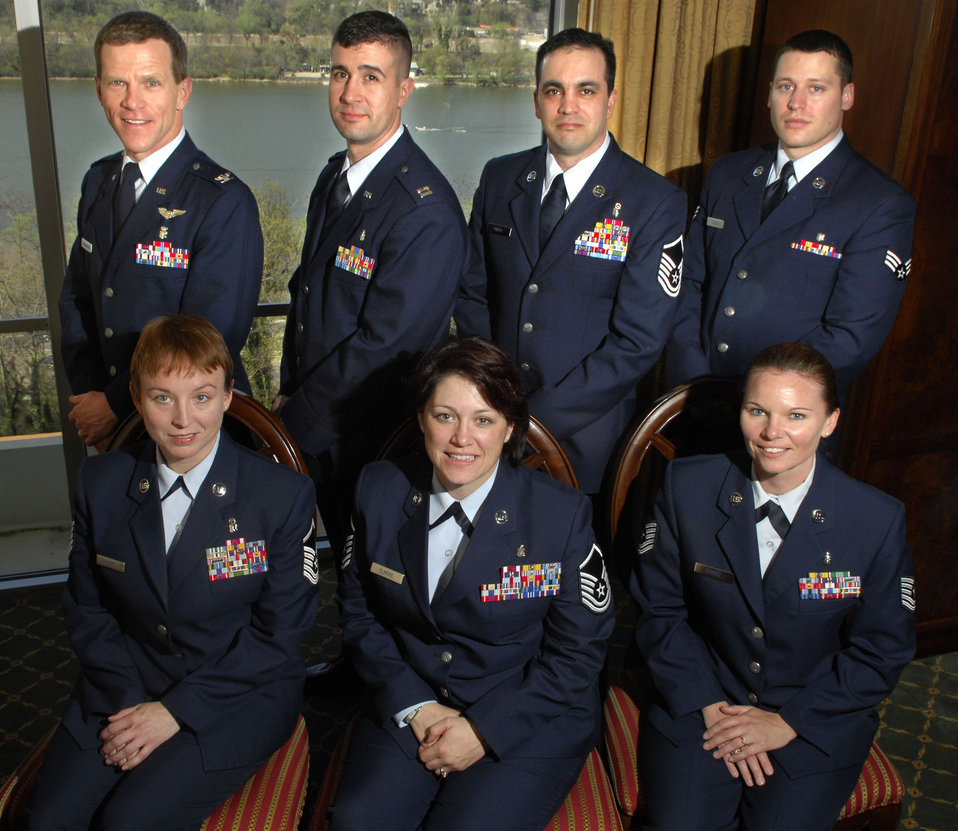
AFA Team of the Year features medical Airmen

The members of the Air Force Association 2007 Team of the Year pose for a photo during their five-day visit to Washington, D.C. The expeditionary medics chosen for the annual AFA award are, in the front row from left, Master Sgt. Michelle Rootes, Master Sgt. Faith Elmore and Tech. Sgt. Crystal Gomez, and in the back row are Col. (Dr.) Jay Johannigman, Capt. Shaun Westphal, Master Sgt. Kory Rivera and Senior Airman Robert Zuniga II.